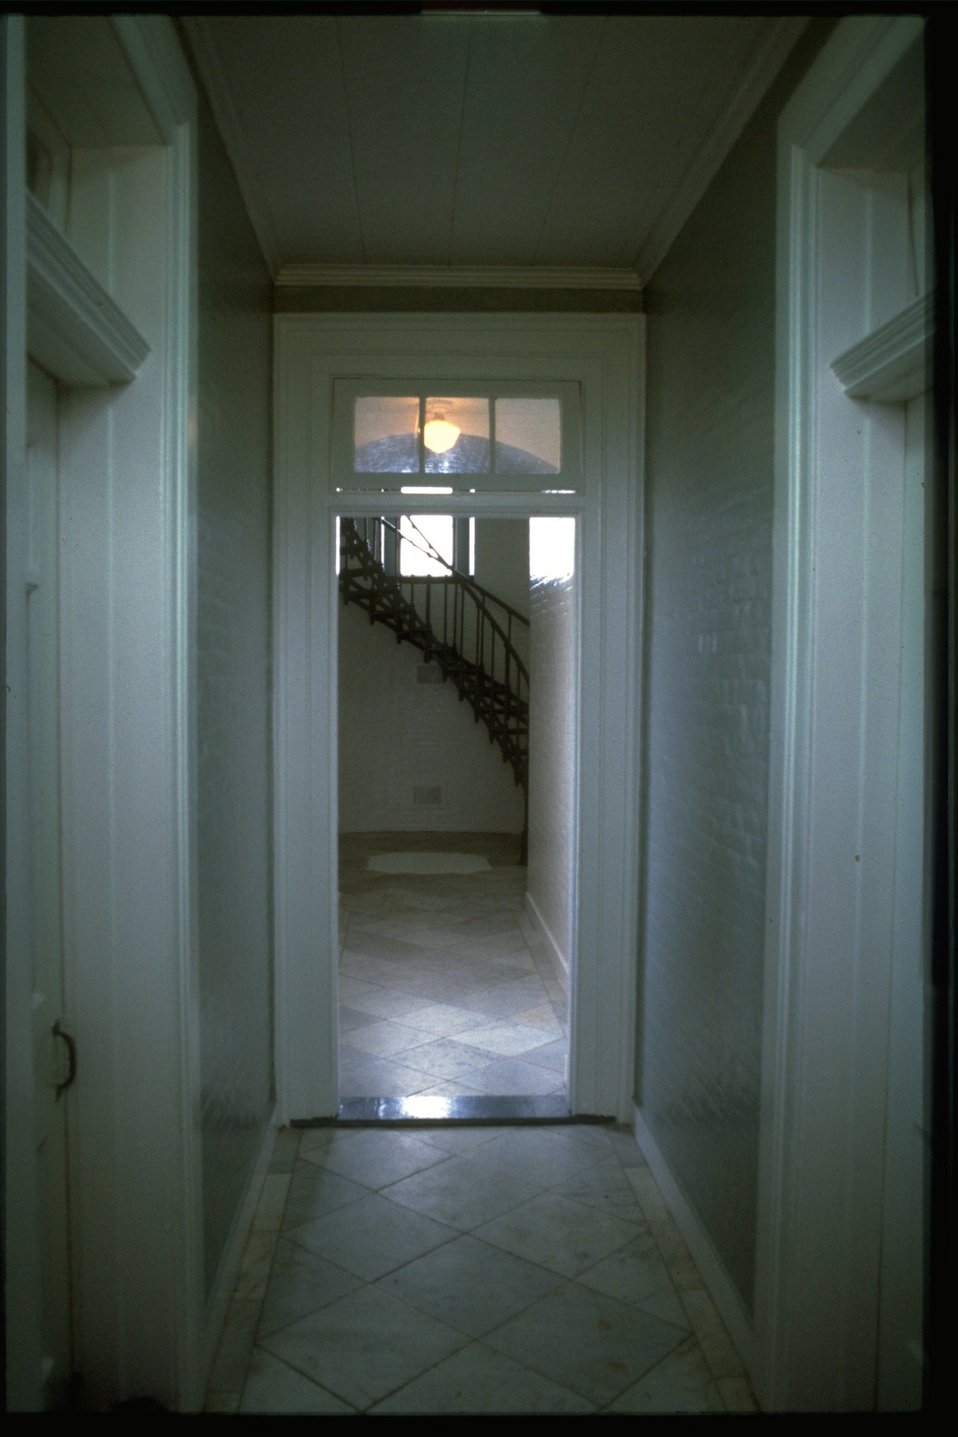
Interior of Yaquina Head lighthouse.